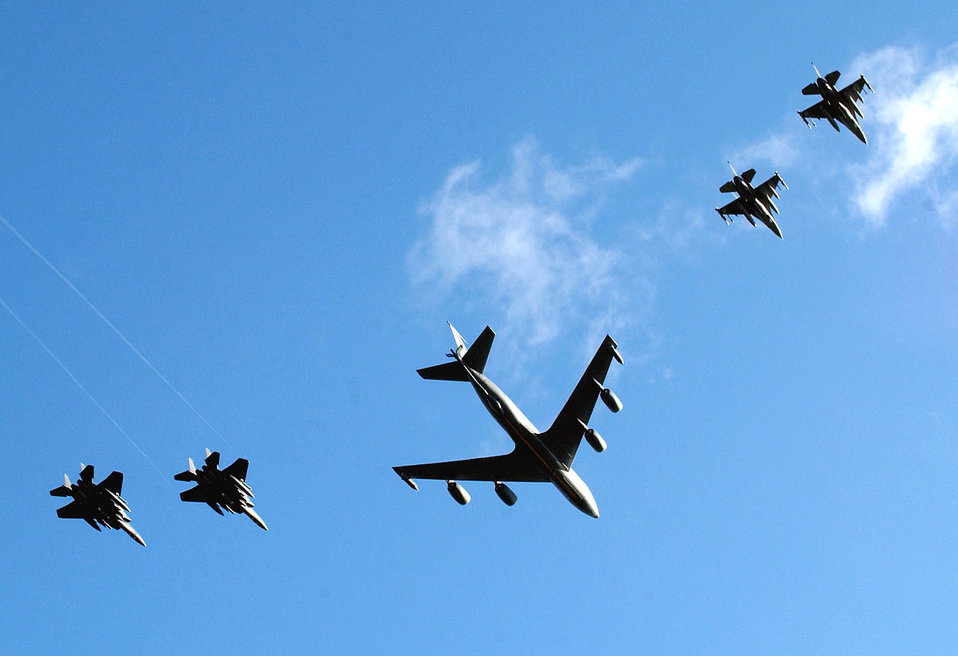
CENTAF releases airpower summary for Jan. 23

Air Force tankers, such as this KC-135 Stratotanker, keep Air Force fighters such as these F-16 Fighting Falcons and F-15E Strike Eagles in the fight.